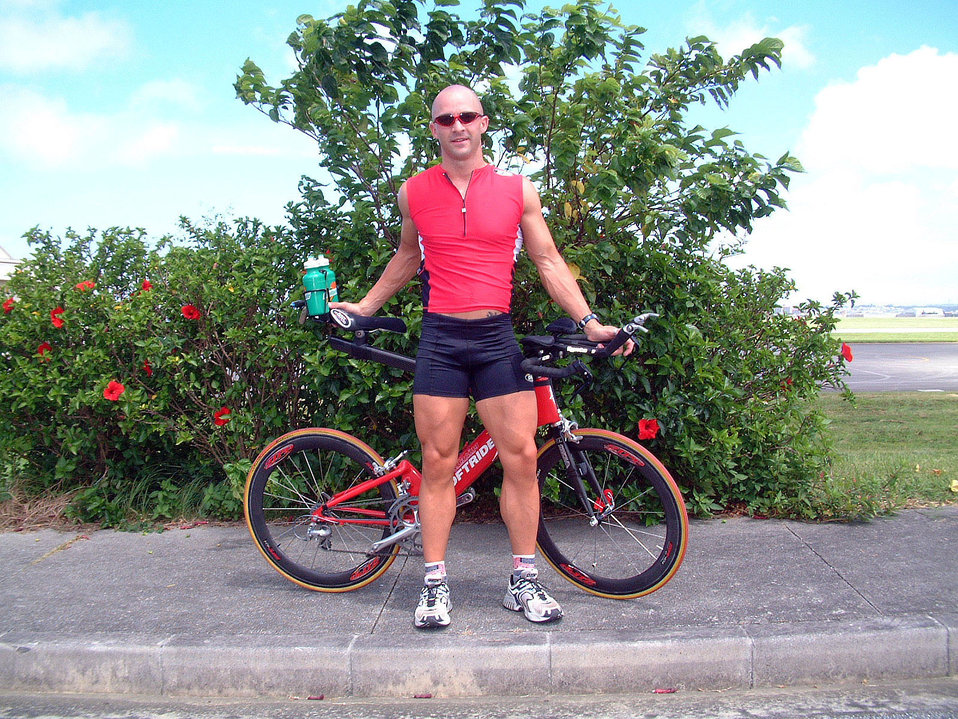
Ironman2

KADENA AIR BASE, Japan -- Shawn Hnatko trains here for the Ironman Triathlon World Championships in Hawaii on Oct. 18. During the competition, he will swim 2.4 miles, bike 112 miles and run a 26.2-mile marathon.